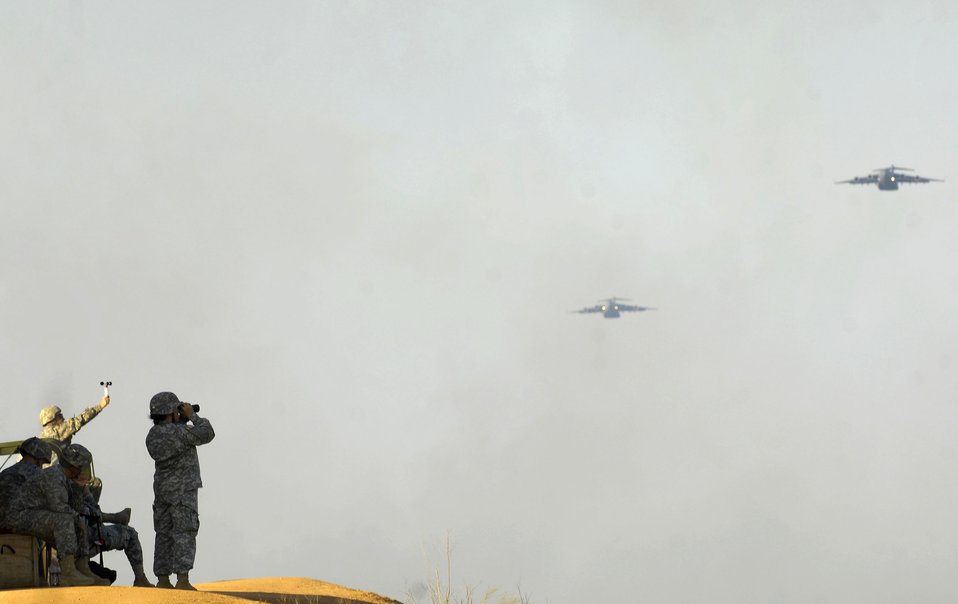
Hercules, Globemaster IIIs support joint training

Army Soldiers watch as two C-17 Globemaster IIIs prepare to drop paratroopers during Joint Forcible Entry Exercise June 18 at Fort Bragg, N.C. The Joint Forcible Entry Exercise is a joint airdrop designed to enhance service cohesiveness between Army and Air Force members, allowing both services an opportunity to properly execute large-scale heavy equipment and troop movement.